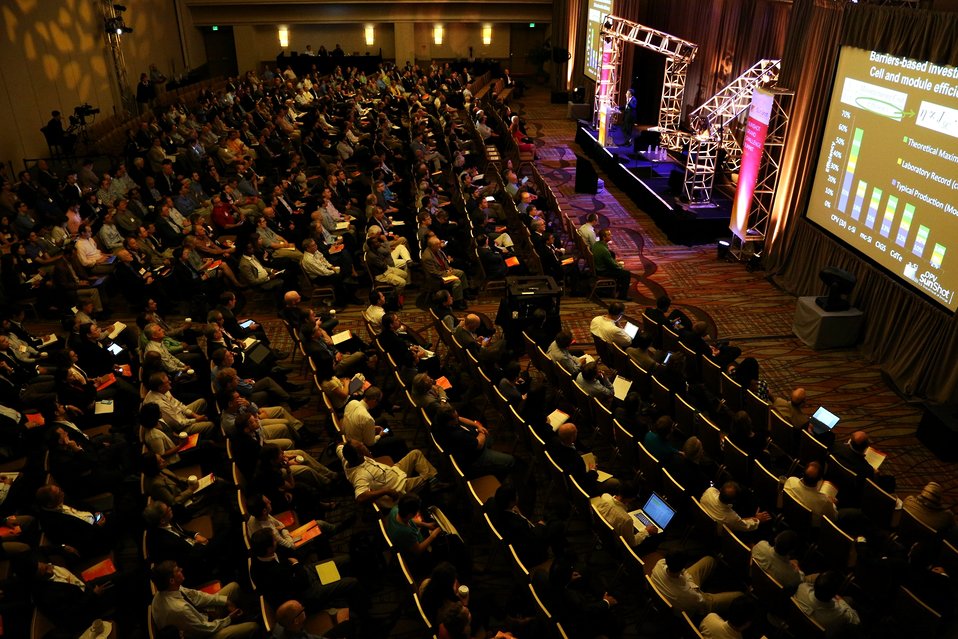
Day 2 Keynote Session 4

The packed plenary session ballroom on day two of the SunShot Grand Challenge Summit.